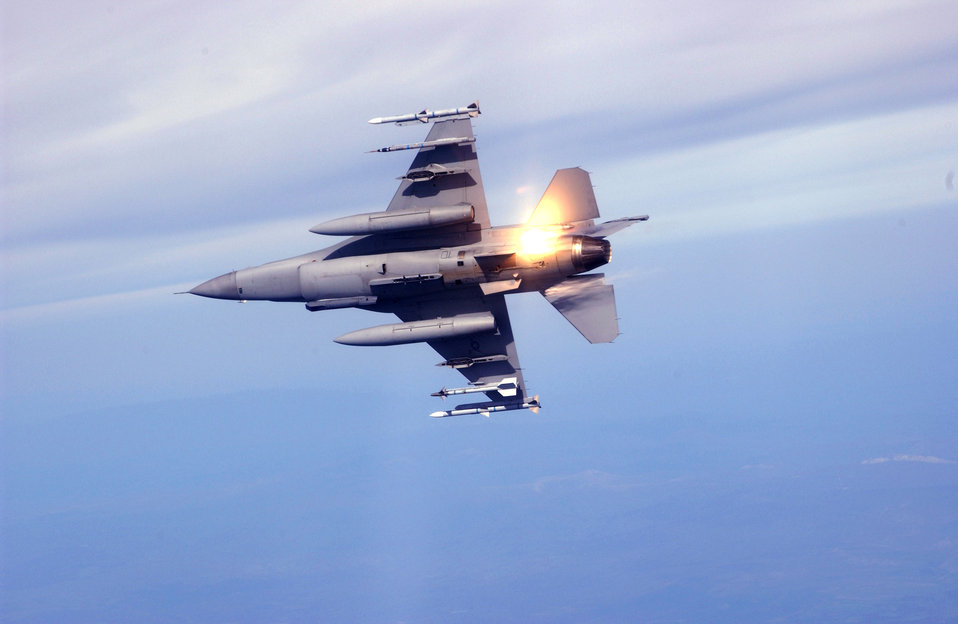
Fighting Falcon shines at Northern Edge

An F-16 Fighting Falcon from the Ohio Air National Guard's 180th Fighter Wing drops flares while performing manuevers at Exercise Northern Edge '06 at Eielson Air Force Base, Alaska, on Friday, June 9, 2006. Northern Edge '06 is a joint training exercise hosted by Alaskan Command.